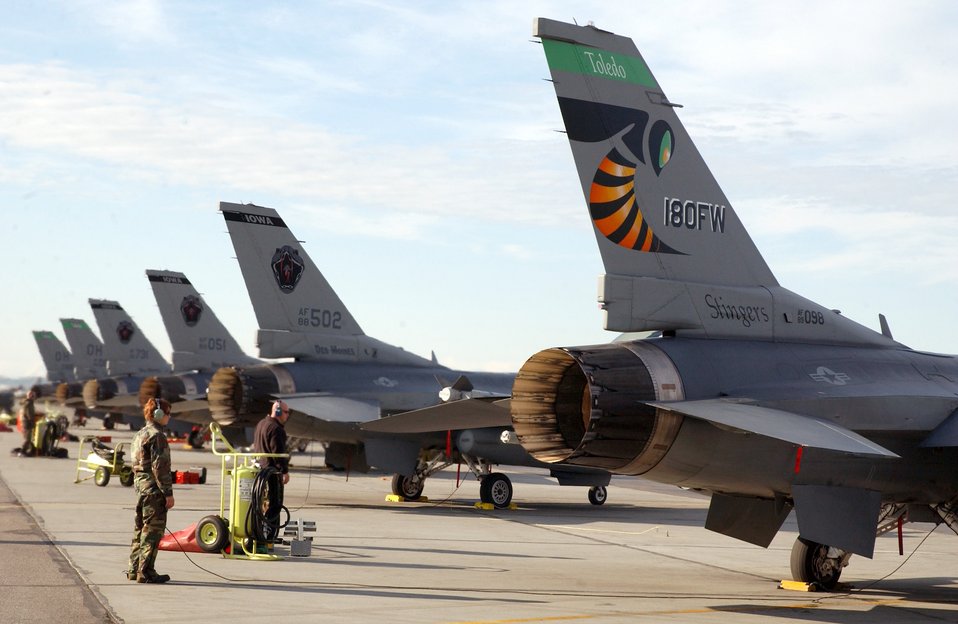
Northern Edge aims for air, sea dominance

F-16 Fighting Falcons from Iowa and Ohio Air National Guard units sit ready on the flightline at Eielson Air Force Base, Alaska, on Tuesday, June 6, 2006, during Exercise Northern Edge 2006. The joint training exercise hosted by Alaskan Command is one of a series of U.S. Pacific Command exercises that prepare joint forces to respond to crises in the Asian Pacific region.